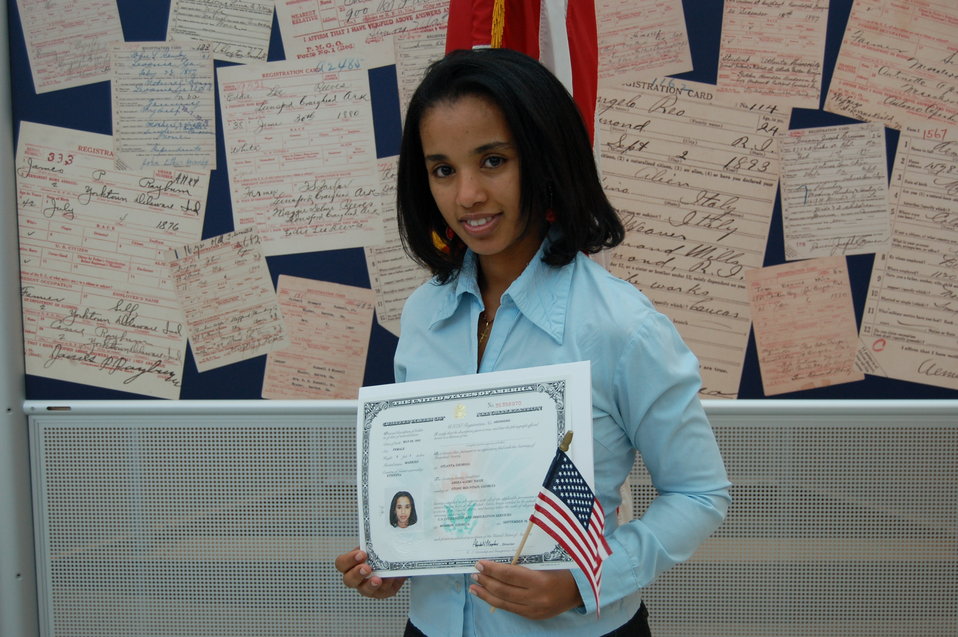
New Citizens